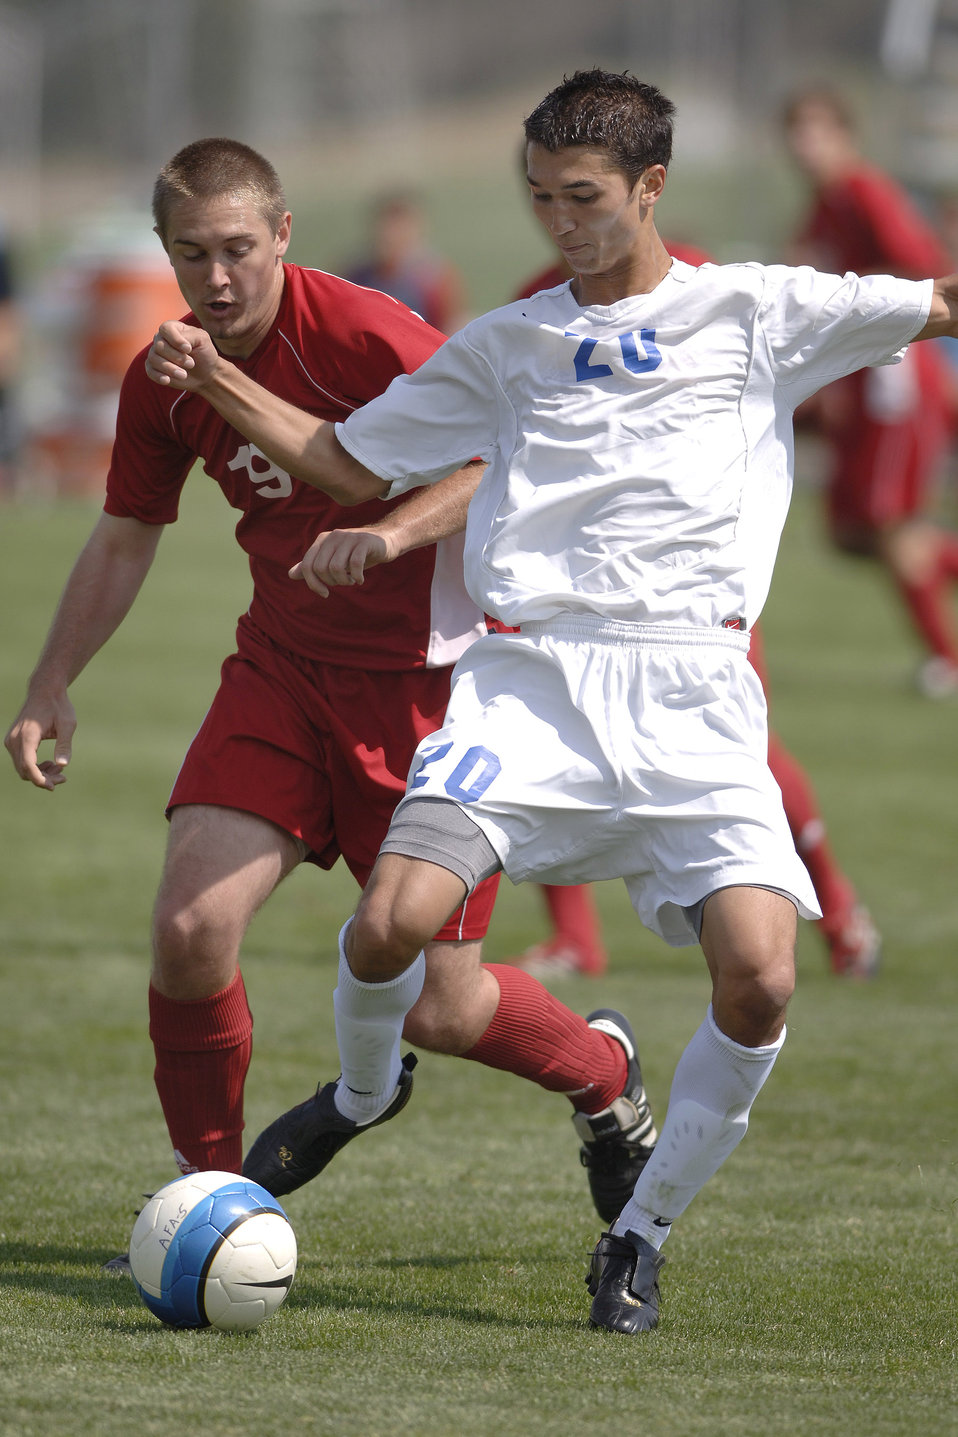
Falcons shut out St. Francis in soccer action

Senior Jason Bellville moves the ball as Air Force posts its second consecutive shutout with a 1-0 victory over St. Francis University in men's soccer action Sept. 9 at the U.S. Air Force Academy Cadet Soccer Stadium in Colorado Springs, Colo. With the victory, Air Force improved to 2-2 this season, while St. Francis fell to 1-3.